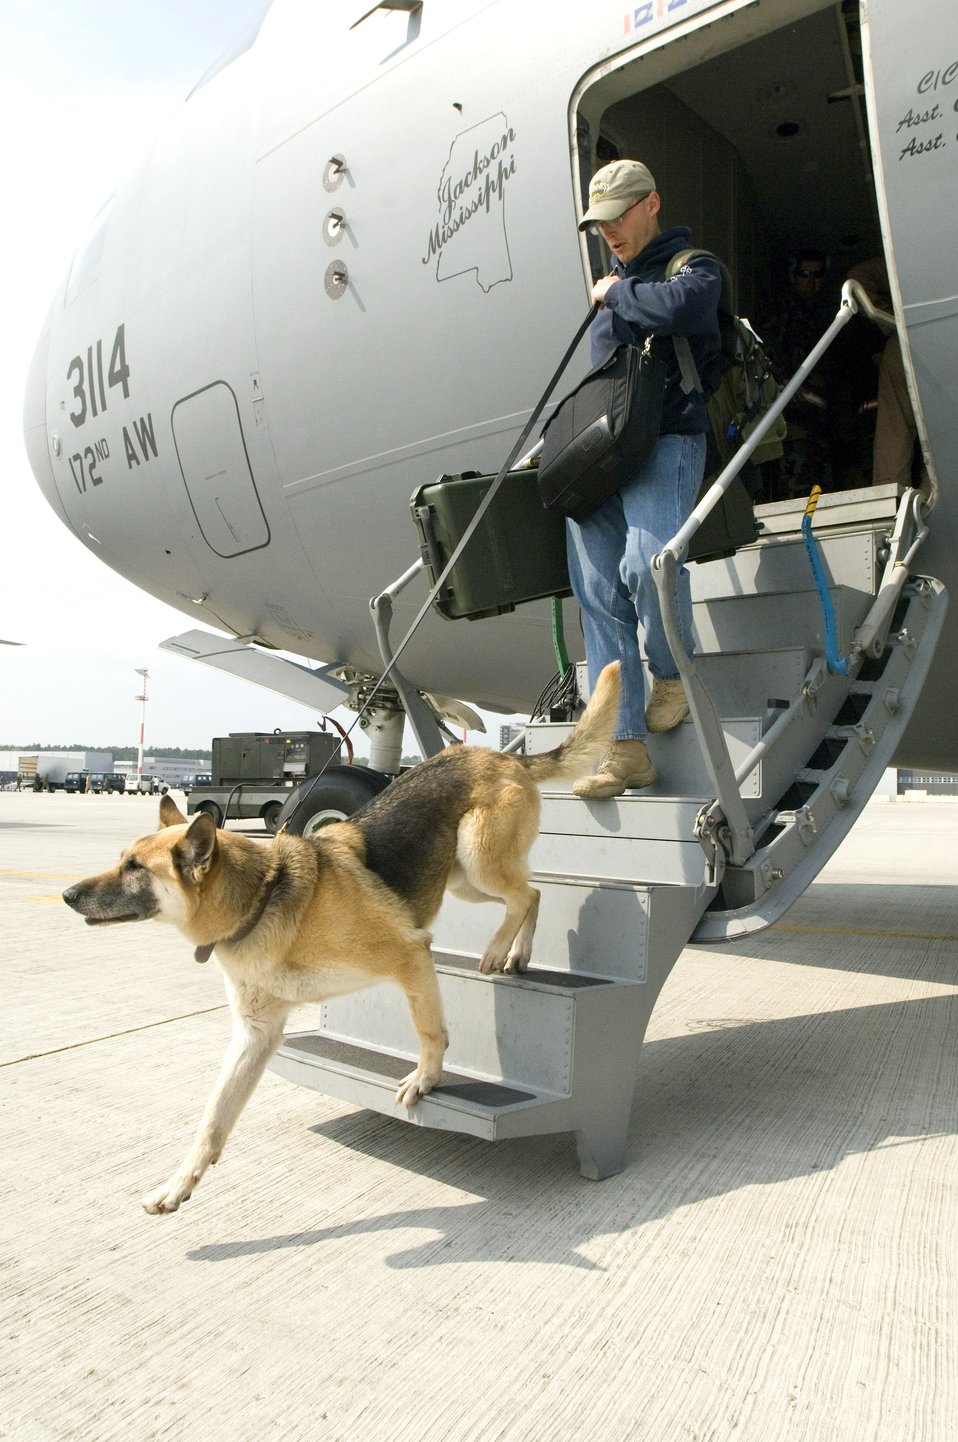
Sergeant's job is for the dogs

Staff Sgt. Jeremy Nichols and military working dog, Vaddy, arrive via on a C-17 Globemaster III at Ramstein Air Base, Germany, on Tuesday, May 9, 2006. Sergeant Nichols and Vaddy, a Belgian Malinois, are from the 28th Security Forces Squadron at Ellsworth Air Force Base, S.D. The team transited Ramstein on their way to a base in Southwest Asia.